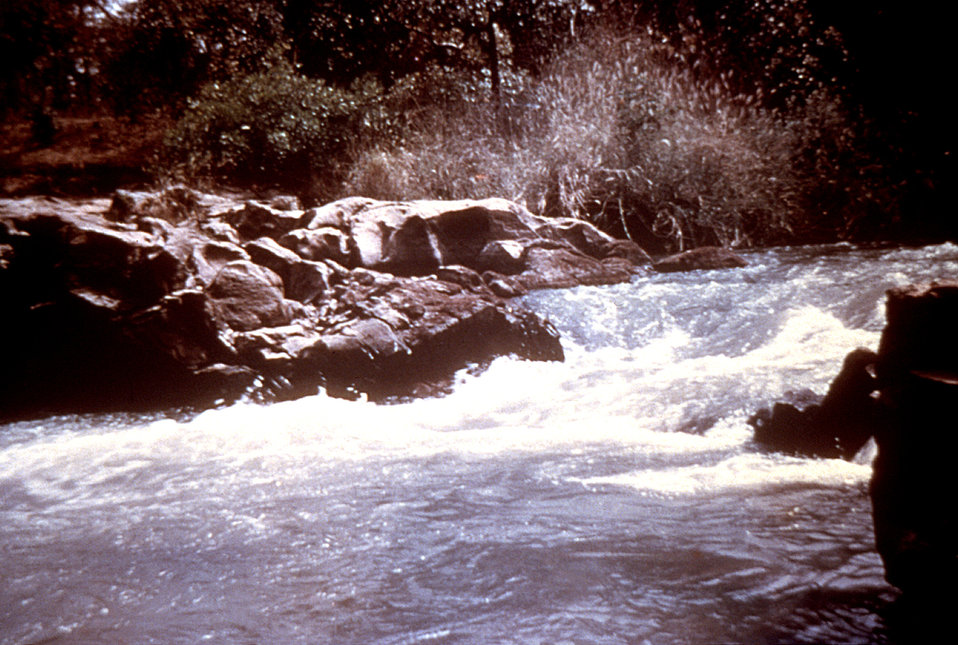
This 1978 photograph depicts a riverine breeding place for blackflies, the vector of onchocerciasis or "river blindness".